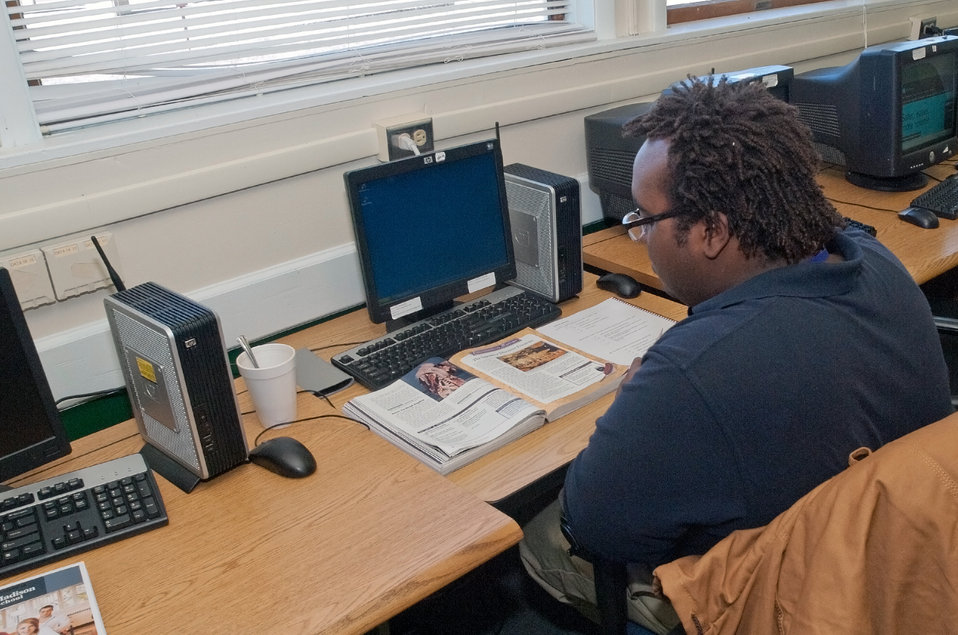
Student Joshua Smith studies at the Job Civilian Conservation Corp Center (JCCCC) in Harpers Ferry, WV on Nov. 8, 2012.The U.S. Forest Service manages 28 Job Corps Civilian Conservation Centers.